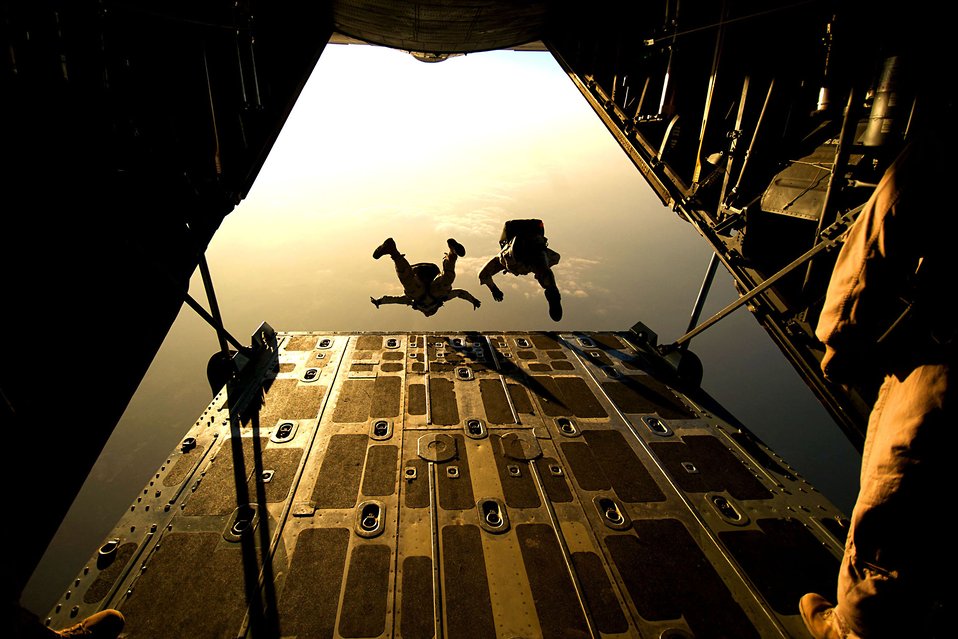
Head first!

Air Force pararescuemen jump from an HC-130 aircraft Dec. 4 during a training exercise off the coast of Djibouti. The Airmen are with the 82nd Expeditionary Rescue Squadron which is assigned to Combined Joint Task Force - Horn of Africa and based out of Camp Lemonier, Djibouti.